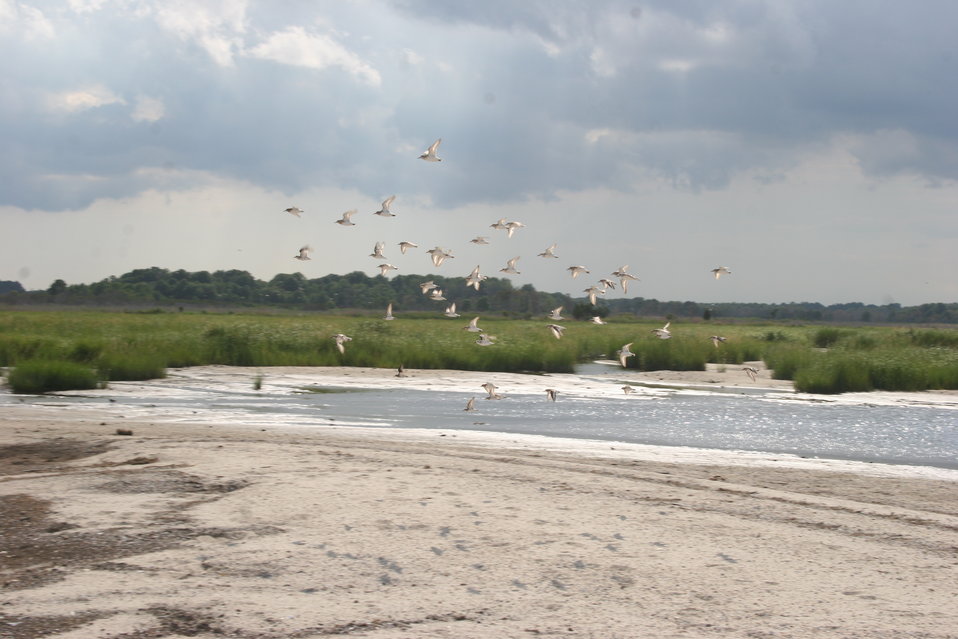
Shorebirds at Prime Hook NWR